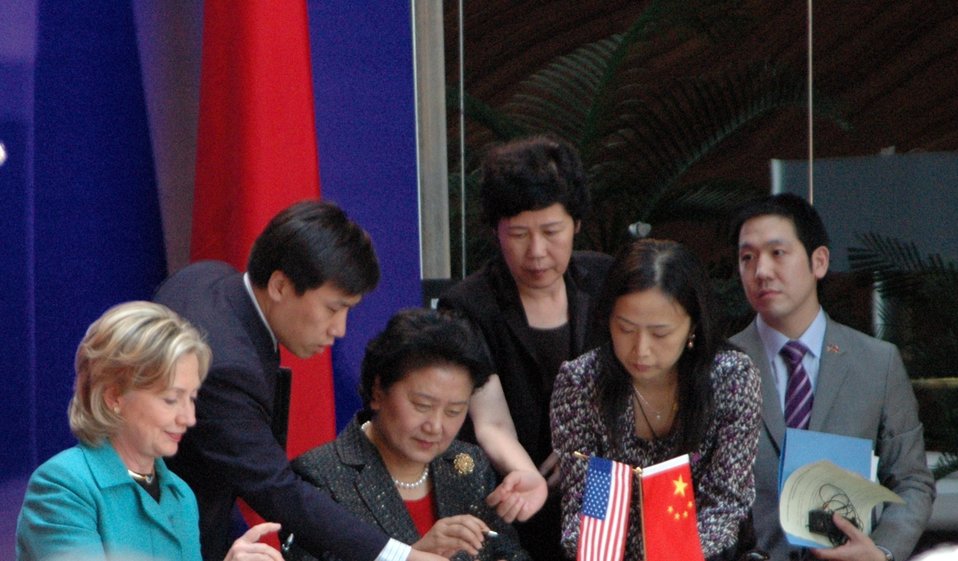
Secretary Clinton Signs People-to-People Exchange Agreement

U.S. Secretary of State Hillary Rodham Clinton signs the U.S.-China Consultation on People-to-People Exchange agreement with Chinese State Councilor Liu Yandong at the National Center for the Performing Arts in Beijing, China, May 25, 2010.